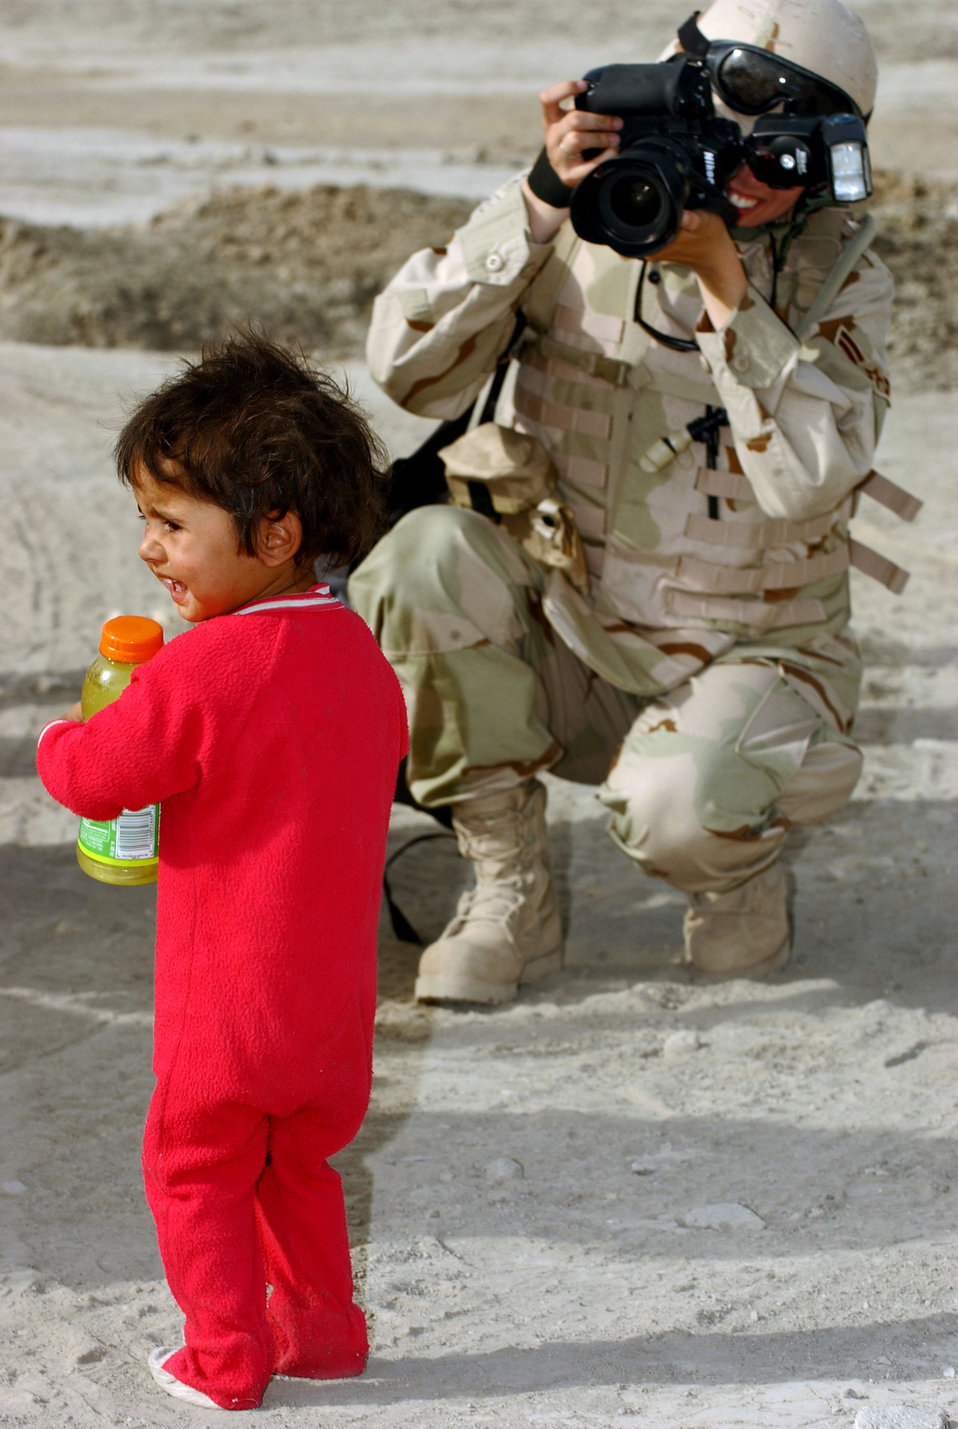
Base photographers document history for future generations

IRAQ -- Airman 1st Class Jamie Shultz photographs a local child outside Ali Base on a security forces mission to interact with locals and provide them a point of contact to call if they see suspicious activity in the area. Touting an M-16 rifle and 30 pounds of camera equipment, the photographers often leave the safety of the installation's perimeter to document missions affecting Airmen. Airman Shultz is a photographer with the 407th Expeditionary Communications Squadron base multimedia center.